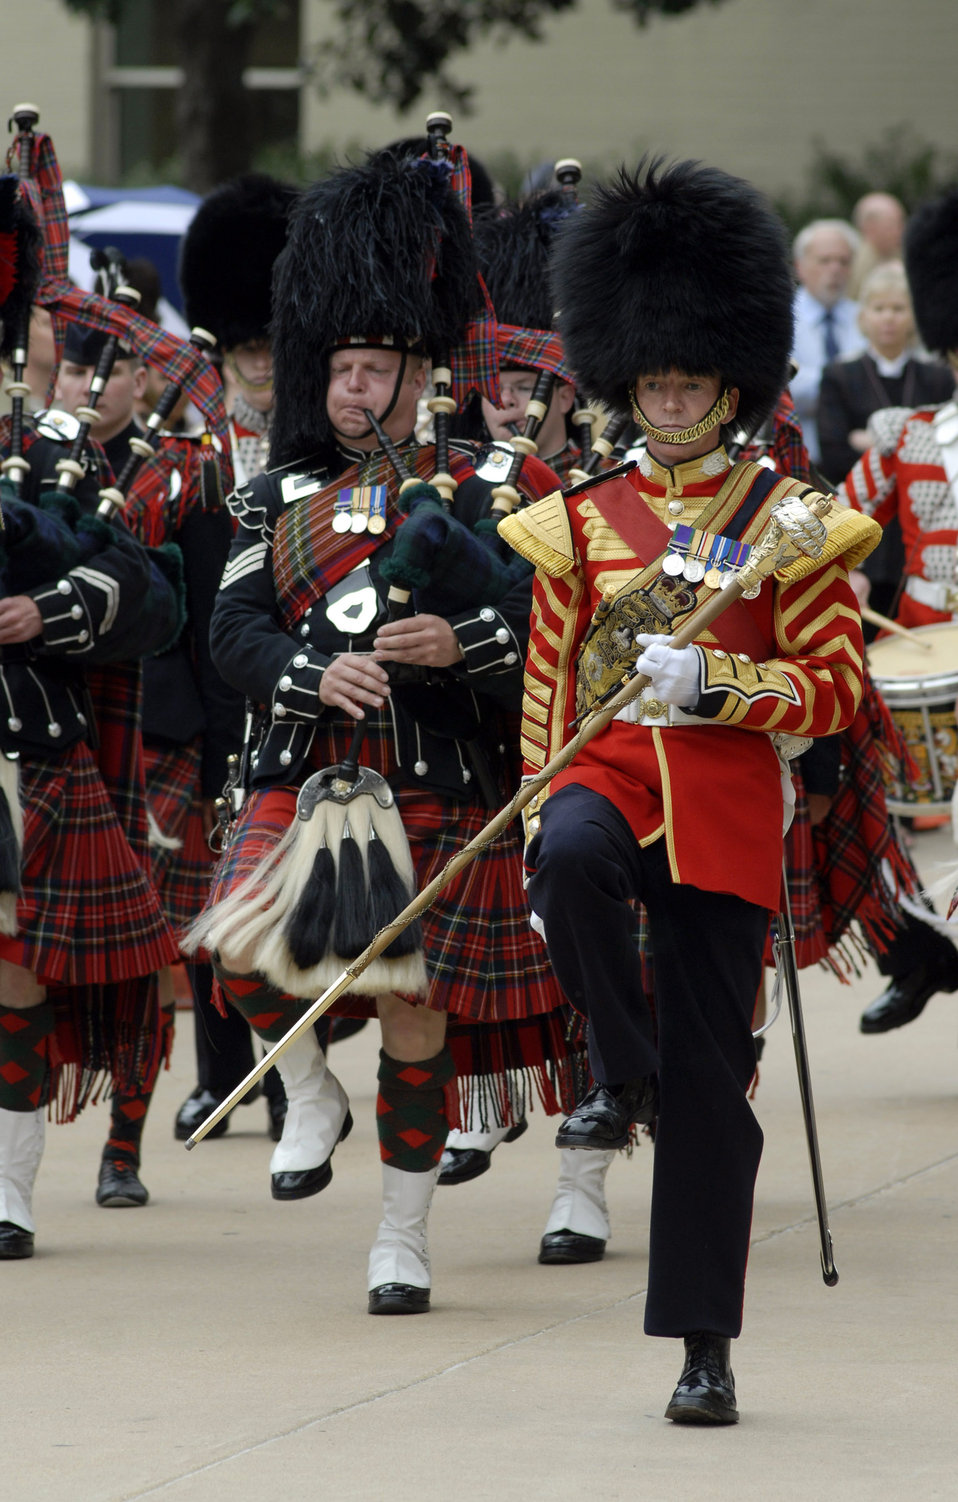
British band performs in Pentagon courtyard

British Army Sgt. Martin Godsman leads the British Army Pipes and Drums of the 1st Battalion Scots Guard during a performance for employees, servicemembers and families Sept. 25, 2009, at the Pentagon. The band of British Army infantry soldiers performed to their closet allies prior to a Helmand Province joint deployment next spring.